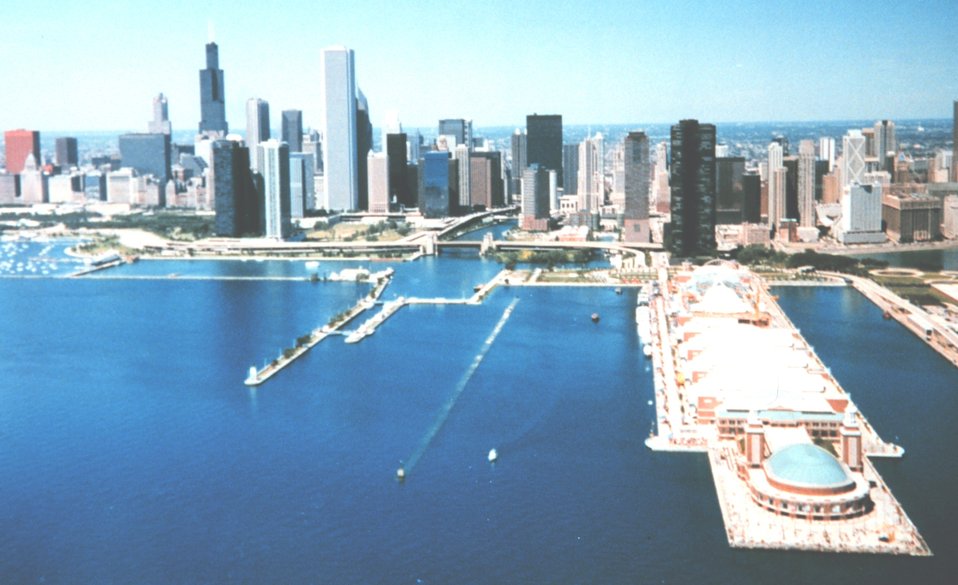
Chicago lakefront.